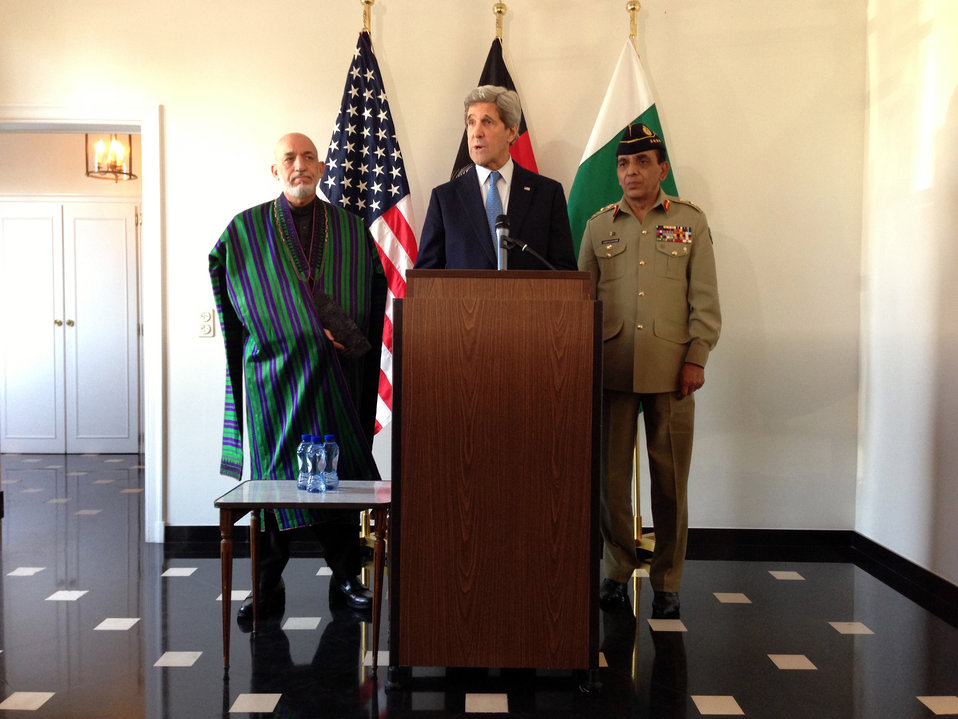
Secretary Kerry Delivers a Statement

U.S. Secretary of State John Kerry delivers a statement after his trilateral meeting with Afghan President Hamid Karzai and Pakistani Chief of Army Staff General Ashfaq Kayani in Brussels, Belgium, on April 24, 2013.